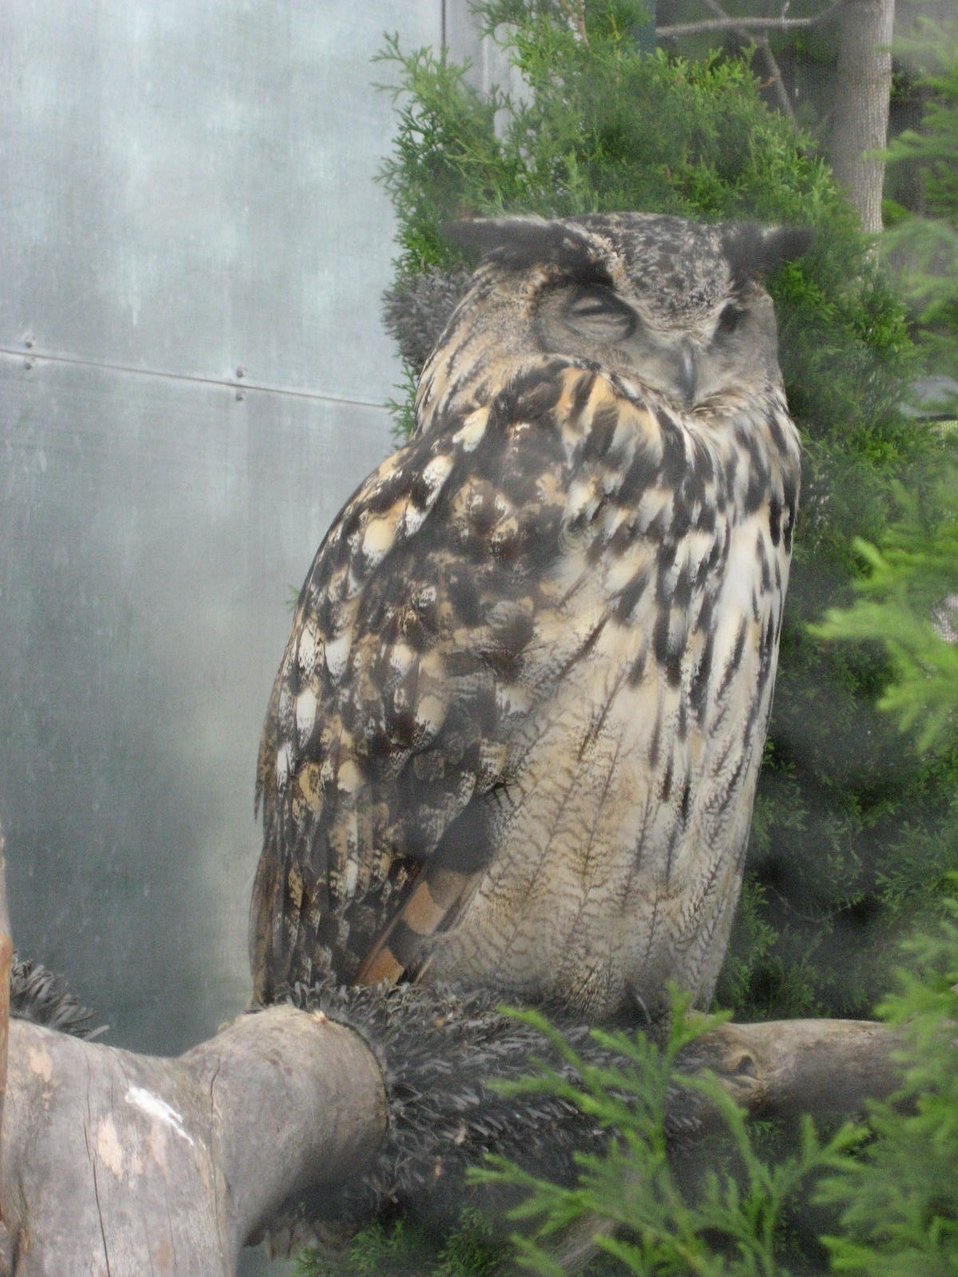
Parc Aquarium Du Quebec, Quebec City, Canada